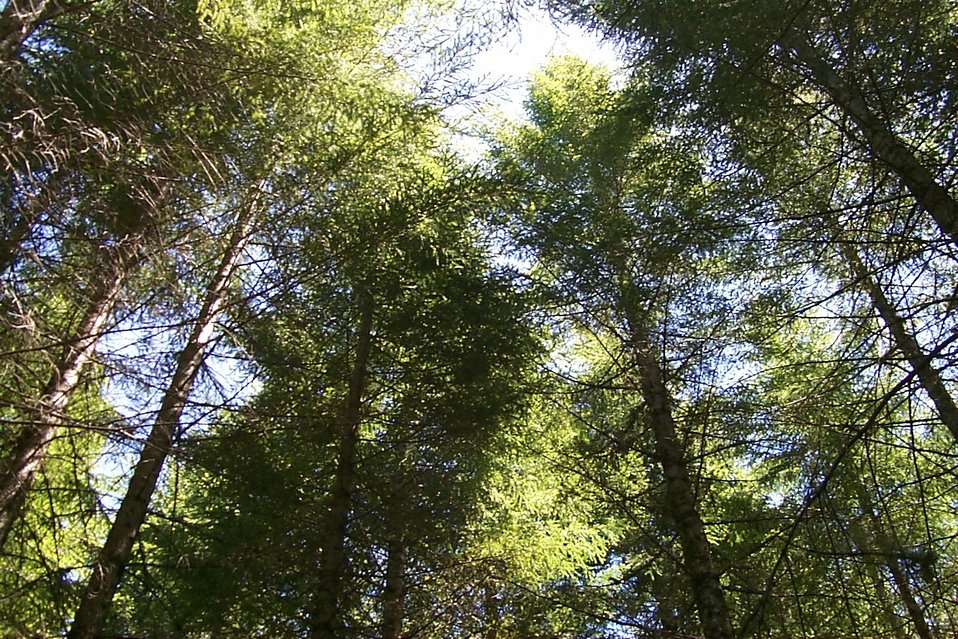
Camas East Timber Sale in Late Successional Reserve.